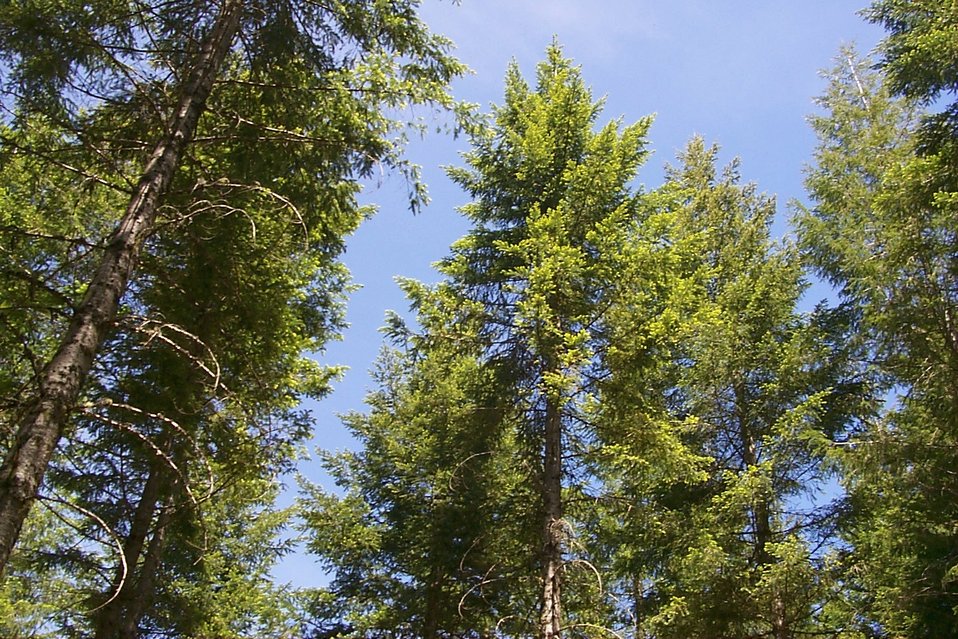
Camas East Timber Sale in Late Successional Reserve.